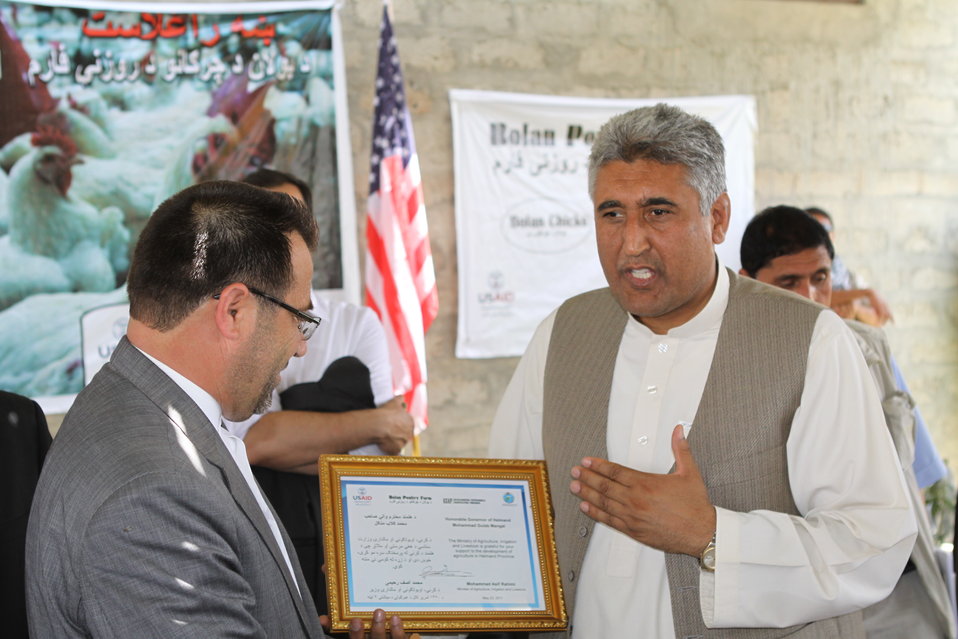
Bolan Poultry Farm